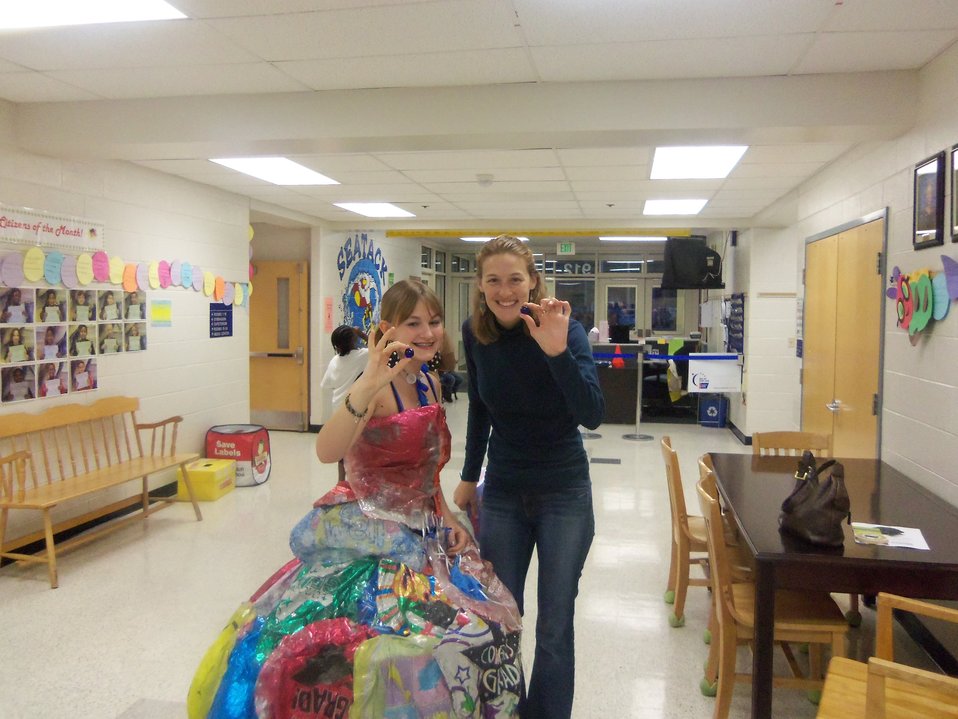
Balloon dress3

Jessica Flory, left, in her balloon dress, with Jennifer Lewis of Eastern Shore of Virginia National Wildlife Refuge, prepares to address the Seatack Elementary School PTA about marine debris. Both hold blue marbles representing the ocean.